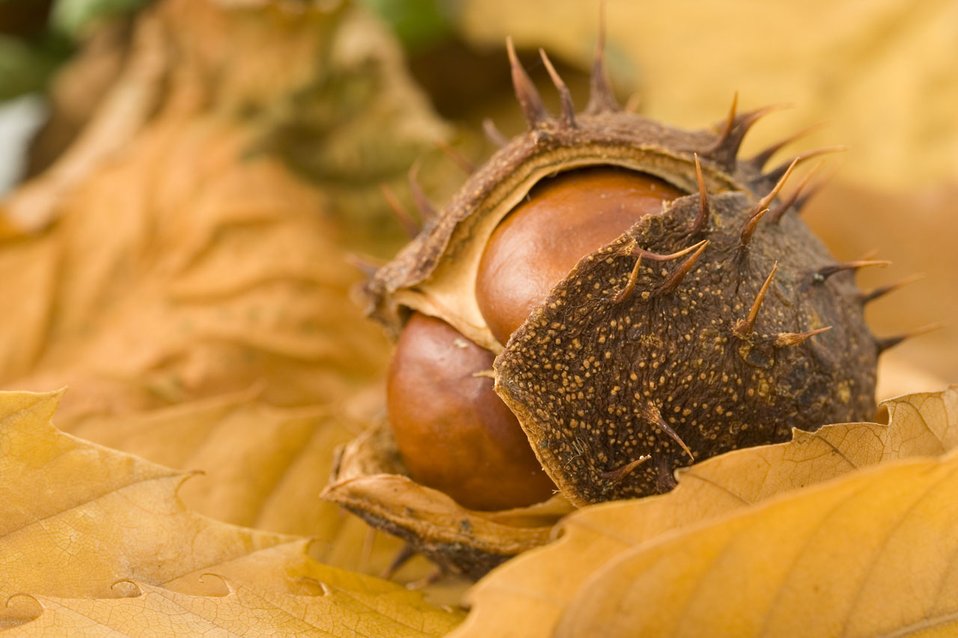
Conker

Macro photo of brown conker.